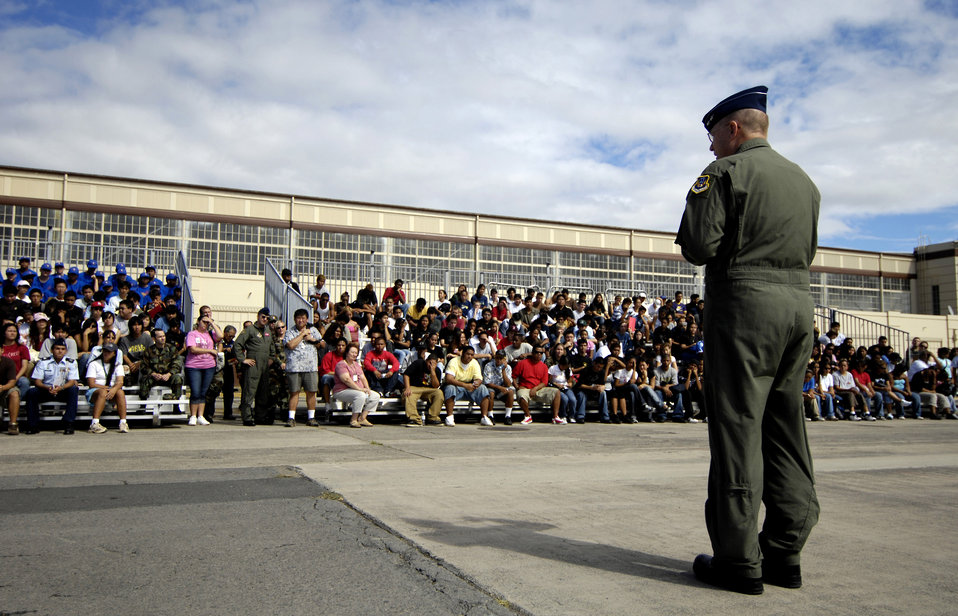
Hickam hosts Education Day

Maj. Gen. Richard E. Perraut Jr. welcomes high school students to Hickam Air Force Base, Hawaii, Sept. 13 during Air Force Education Day. Members of 13th Air Force hosted the day for Hawaii public school math and science students as part of Air Force Week Honolulu. General Perraut is 13th AF vice commander.